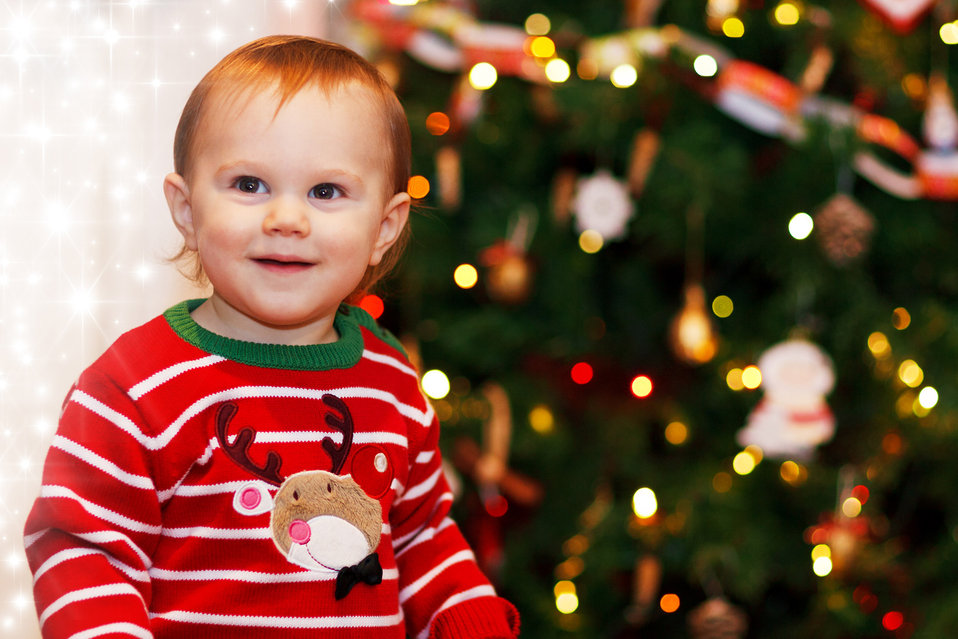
Young boy at christmas time

Young boy with a christmas tree in the background.